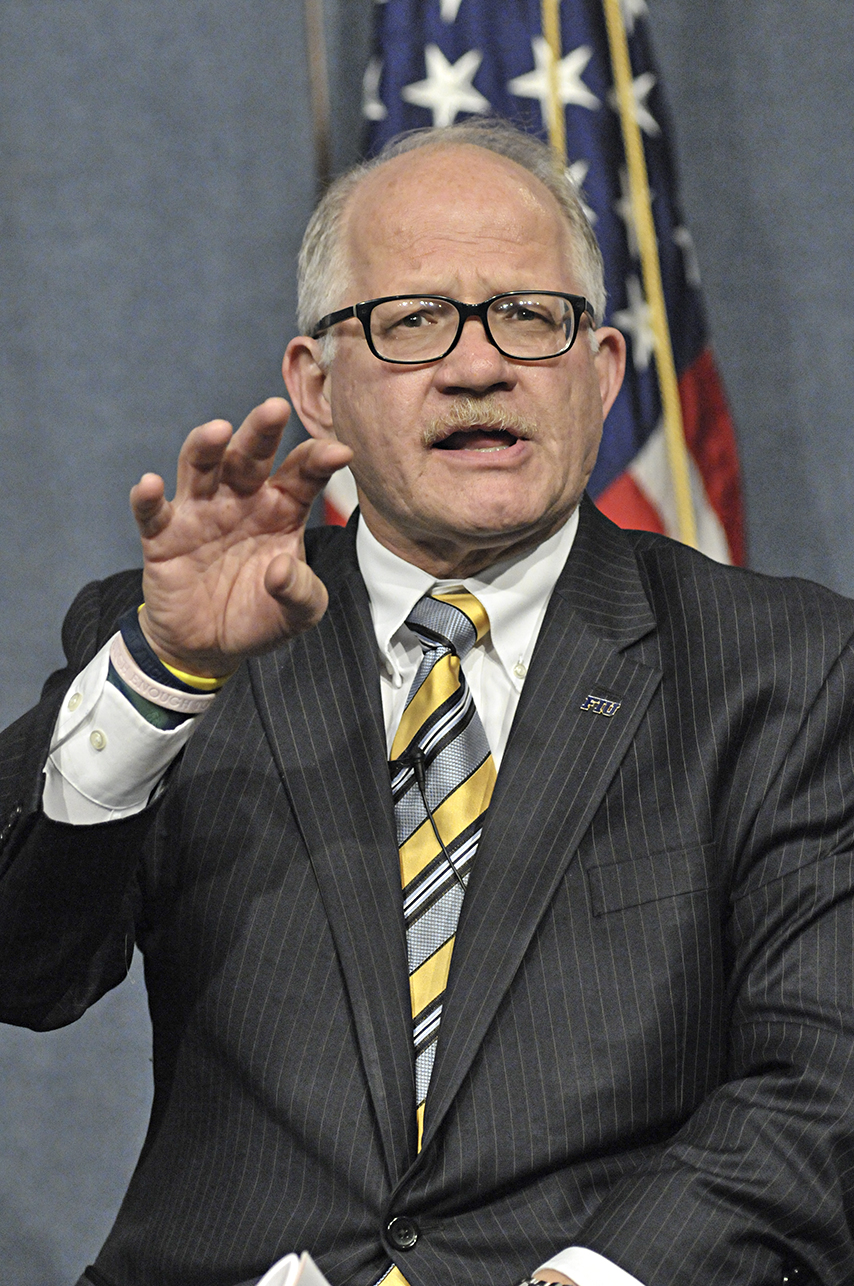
Panel: Increasing Minority Participation in the Energy Sector

Dr. Mark Rosenberg, President of Florida International University, speaks at the launch of Minorities in Energy Initiative on September 24, 2013.